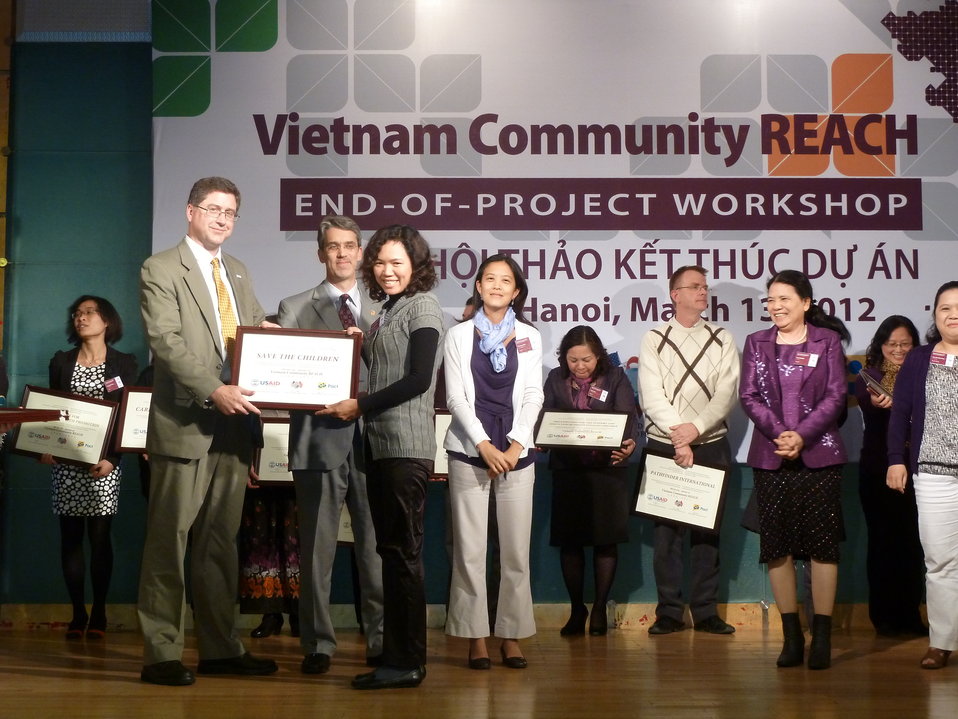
USAID, PEPFAR, and Pact award certificates to local and international partners for their work in addressing HIV in Vietnam

Community REACH project close-out with USAID and implementing partner, Pact